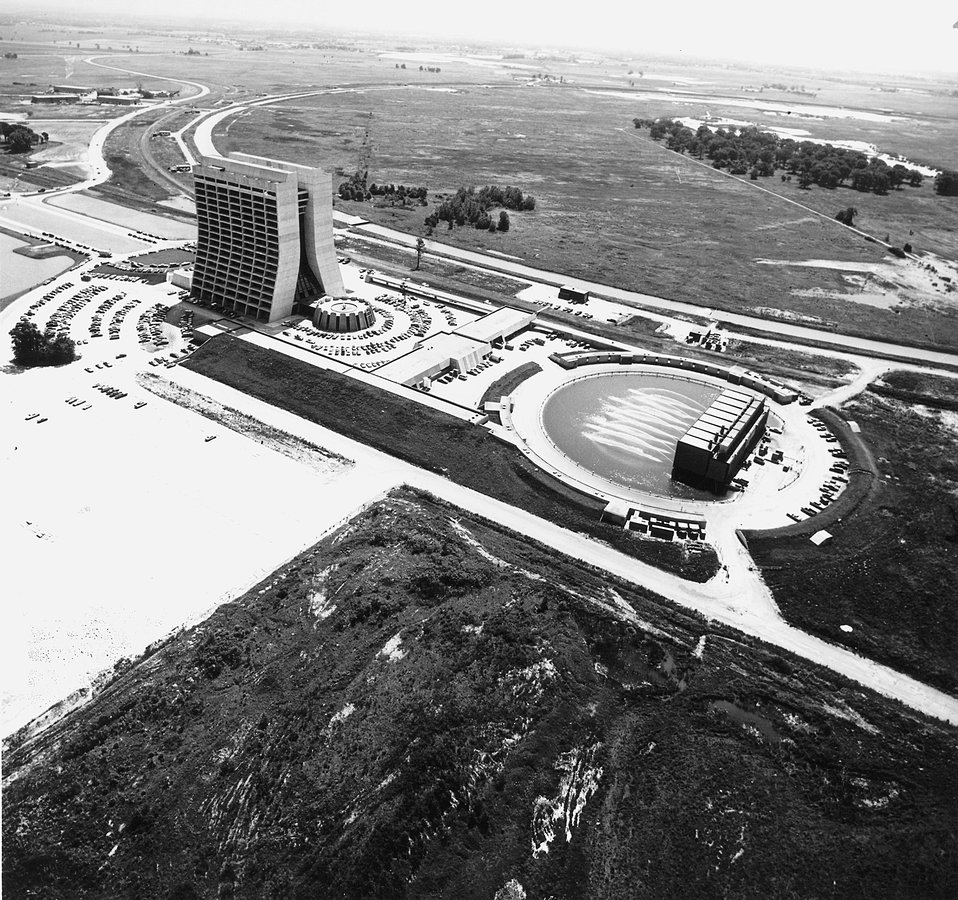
The Fermi NAL. to the right, is the circular mound of the booster ring the booster cooling pond. Beyond is the large main accelerator ring.
c.1974